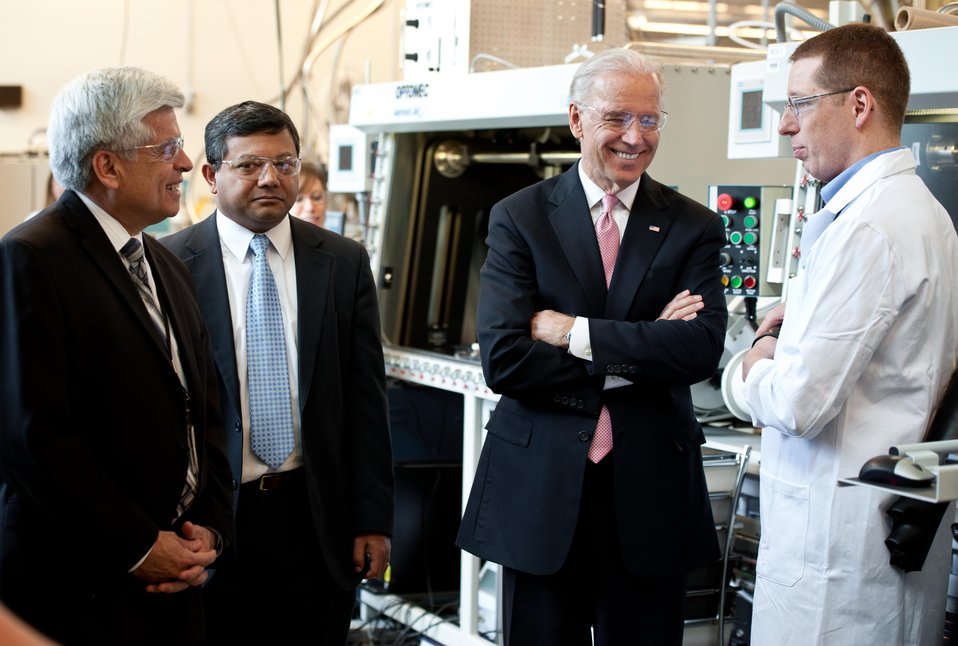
VICE PRESIDENT JOE BIDEN TAKES TOUR OF THE PROCESS DEVELOPMENT AND INTEGRATION LABORATORY AT NATIONAL RENEWABLE ENERGY LABORATORY ON MAY 20,2011.